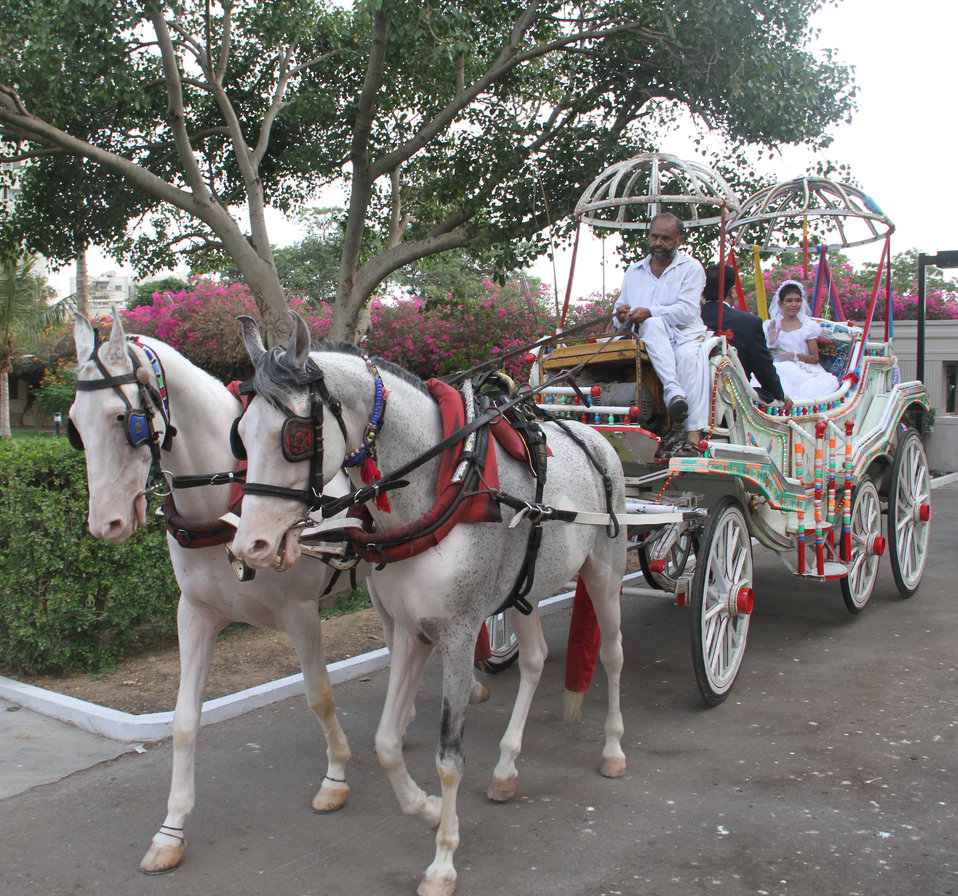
Make-A-Wish

Karachi, July 27, 2011 – Twelve year-old Saira Nadeem arrives at the old residence of the U.S. Consul General dressed up as a princess in a decorated horse-carriage. Saira Nadeem, who is suffering from a heart disease, wished to be a fairy or princess. With a grant from USAID, Make-A-Wish Pakistan will grant the wishes of 55 children.